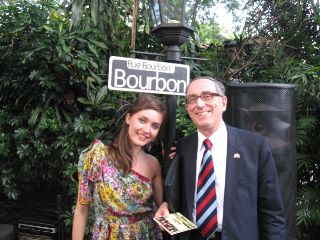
July 4th Celebration at U.S. Embassy in Honduras

Sasha Masakowski and Public Affairs Officer Michael Stevens pose for a photo on “Bourbon Street” at the U.S. Independence Day celebration at the U.S. Ambassador to Honduras’ residence in Tegucigalpa, Honduras, on July 2, 2010.